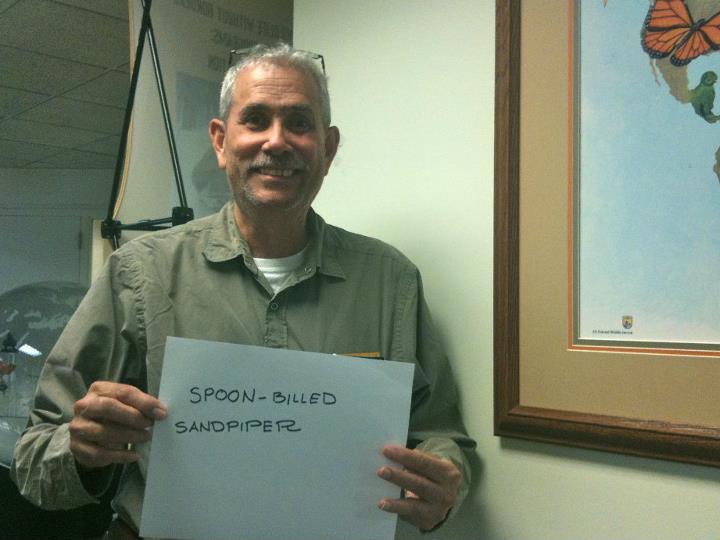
Gilberto Cintron, 'Spoon-Billed Sandpiper,'

International Affairs participates in FFI's In Our Hands campaign